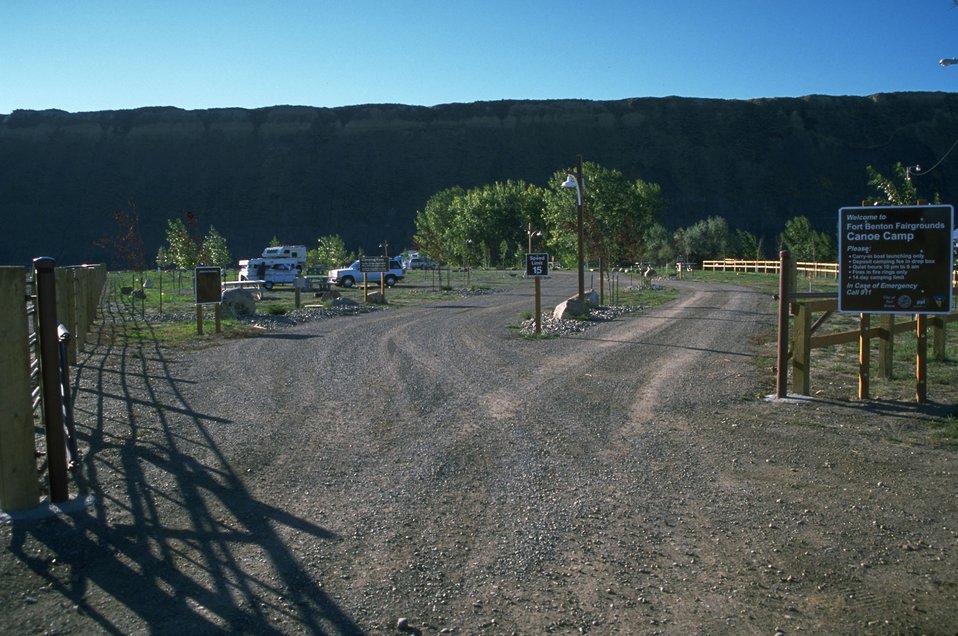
Canoe launch campgrounds at Fort Benton fairgrounds